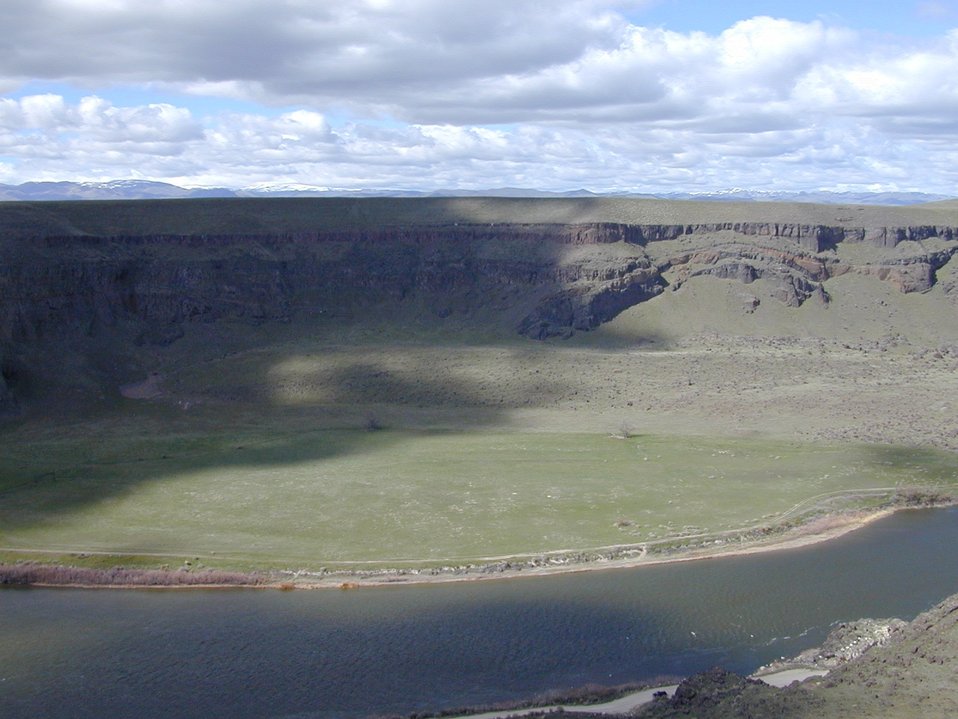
Snake River Birds of Prey National Conservation Area Lower Snake River District LSRD Snake River Canyon Scenic